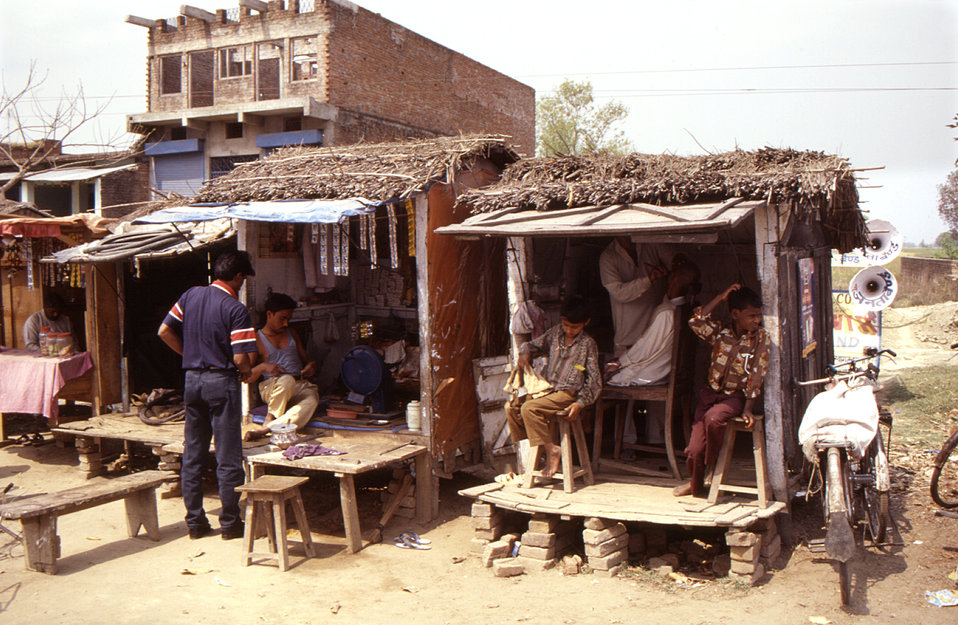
The scene depicted here in this 2000 photograph was captured by Chris Zahniser, B.S.N., R.N., M.P.H., during a field assignment in India, as a 'Stop Transmission of Polio' (STOP) team member. The STOP Initiative was part of the Stop Polio Campaign of 2000, which was a global effort to eradicate polio, and was the largest public health initiative in history. The initiative was established in 1988 by the World Health Assembly with its main goal being that of the eradication of polio, while strengthening the worldwide capacity to control other major childhood diseases.